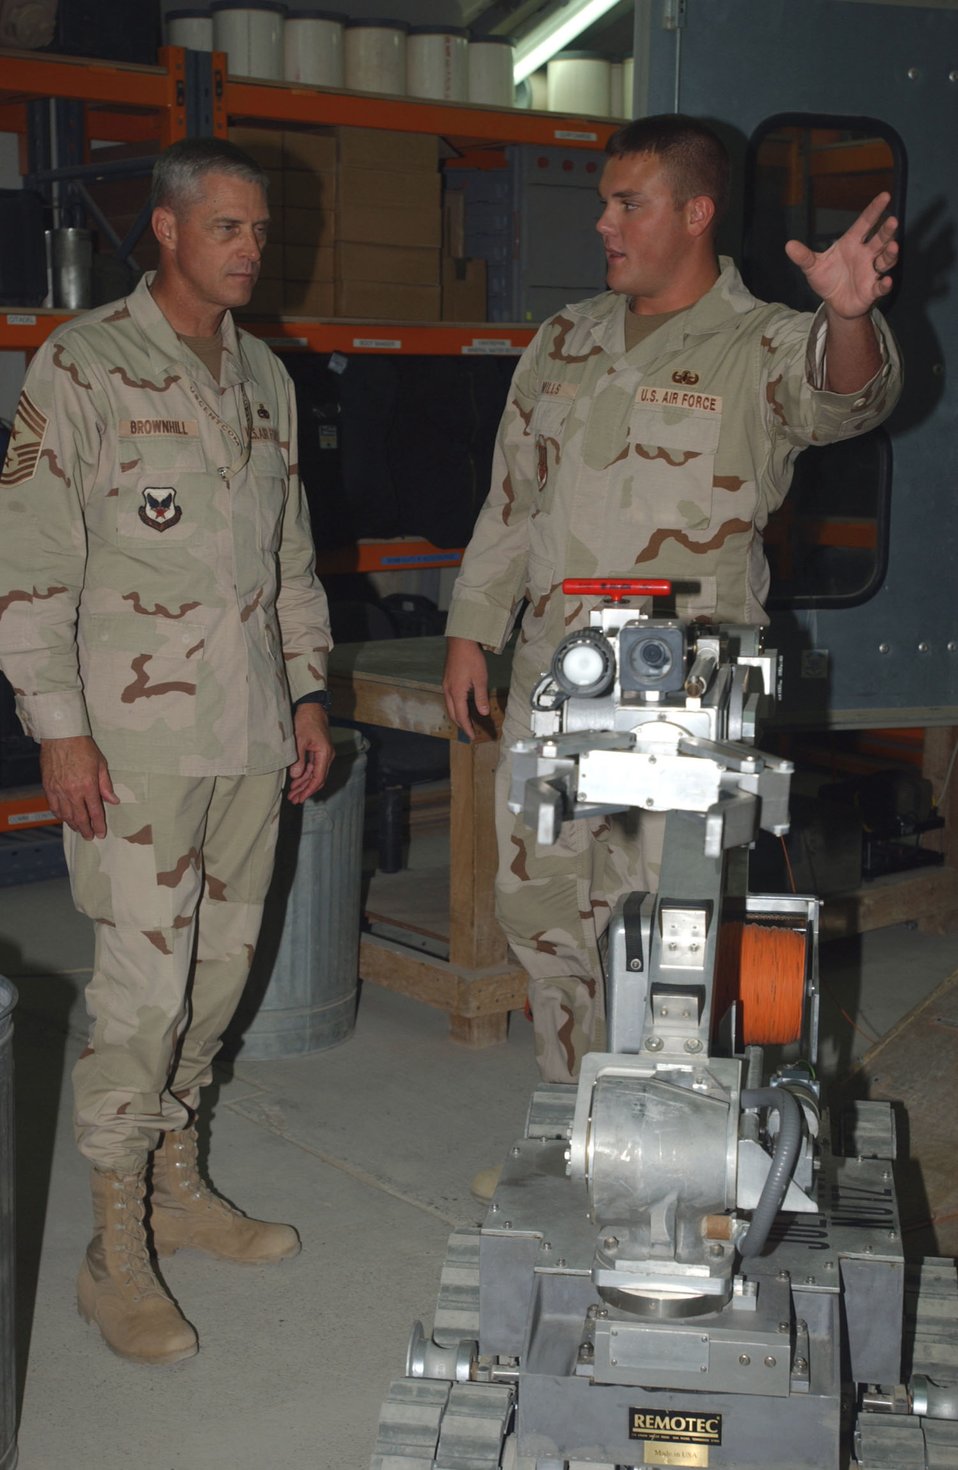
CENTCOM command chief: Knowledge, actions have far reach

SOUTHWEST ASIA -- Airman 1st Class Joshua Mills (right) explains the capabilities of an explosive ordnance disposal robot to Chief Master Sgt. Curtis Brownhill, the command chief for U.S. Central Command. The chief is touring bases in the CENTCOM area of responsibility. Airman Mills is assigned to the 380th Expeditionary Civil Engineer Squadron at a forward-deployed location and is from McGuire Air Force Base, N.J.